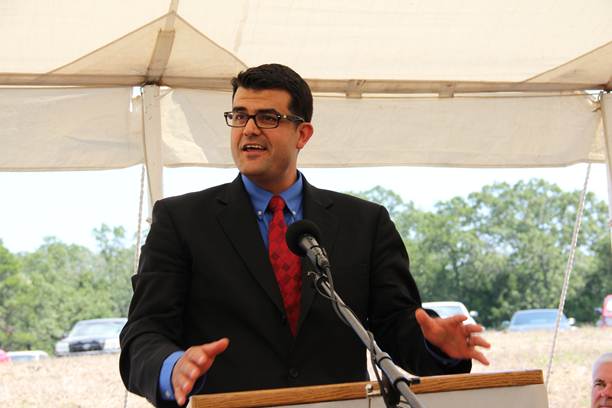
Administrator Padalino speaking at the Ozark Mountain Regional Public Water Authority Treatment Plant in Arkansas. The opening marked completion of the 500th water and environmental project completed by USDA through the Recovery Act.